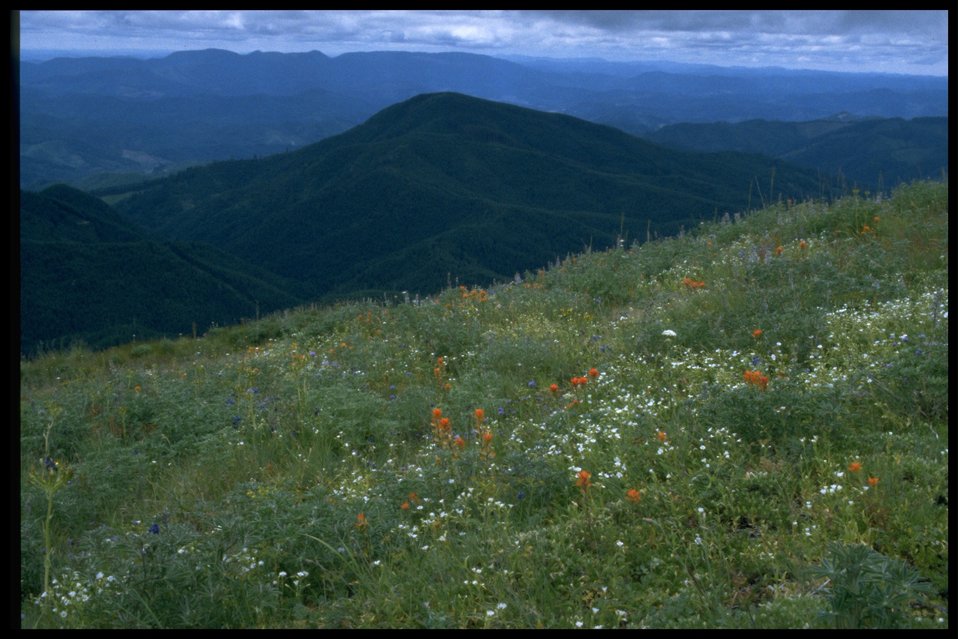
Meadow, wildflowers, scenic view from Mary's Peak.